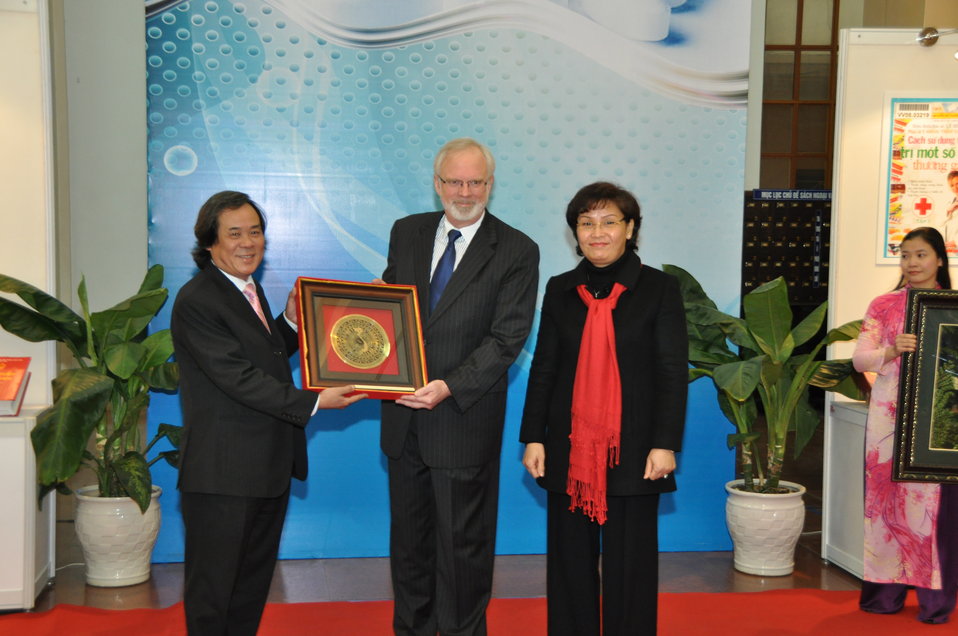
U.S. Ambassador David Shear opens safe medicine exhibition in Hanoi

Safe Medicine Exhibition